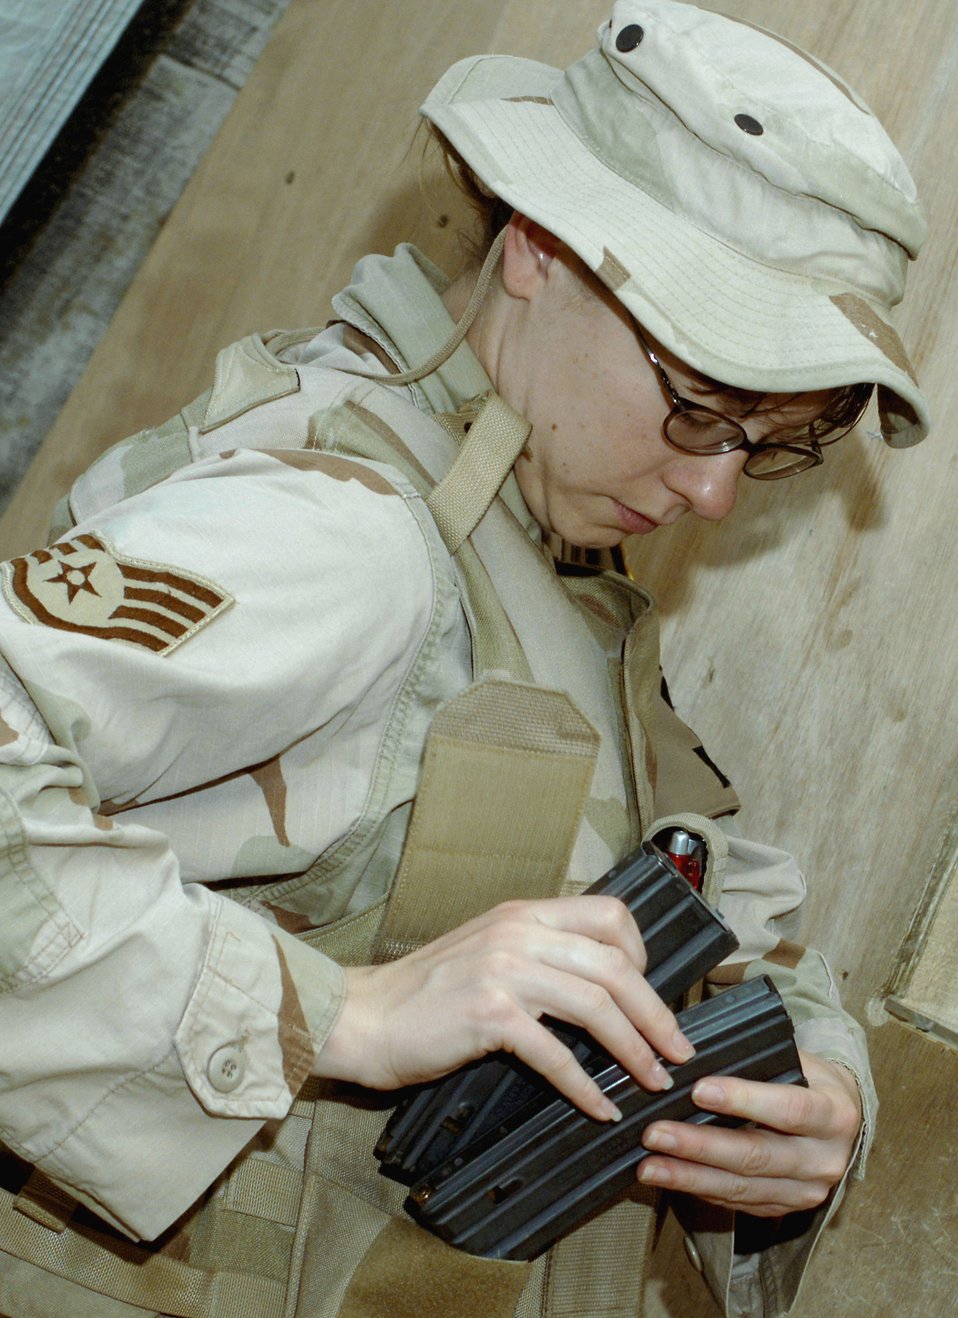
All secure

ALI BASE, Iraq (AFPN) -- Staff Sgt. Rebecca Schneider loads ammunition from the armory and prepares to post Feb. 16. Sergeant Schneider is with the 407th Expeditionary Security Forces Squadron.